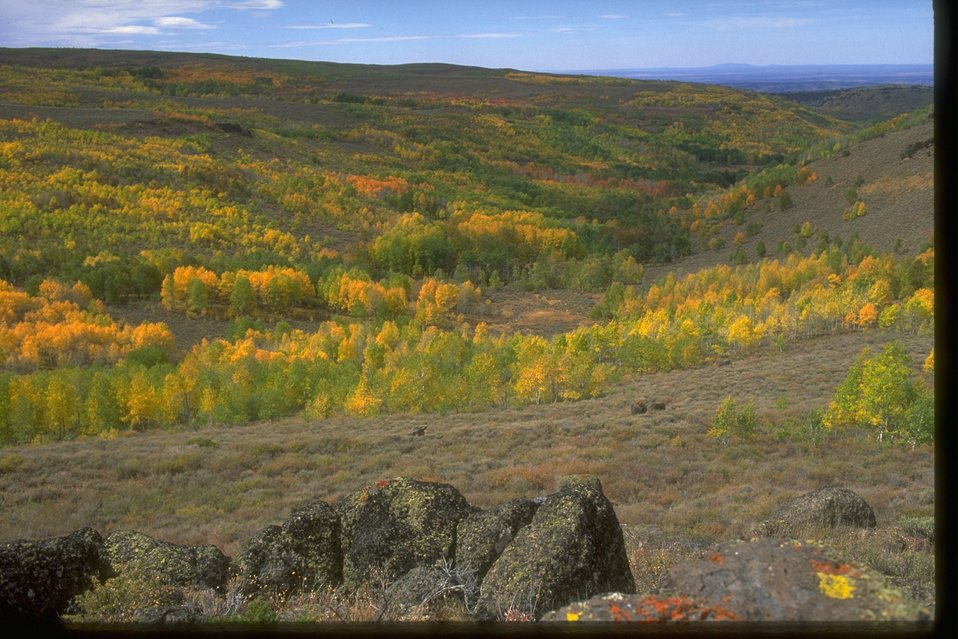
Steens Mountain series.